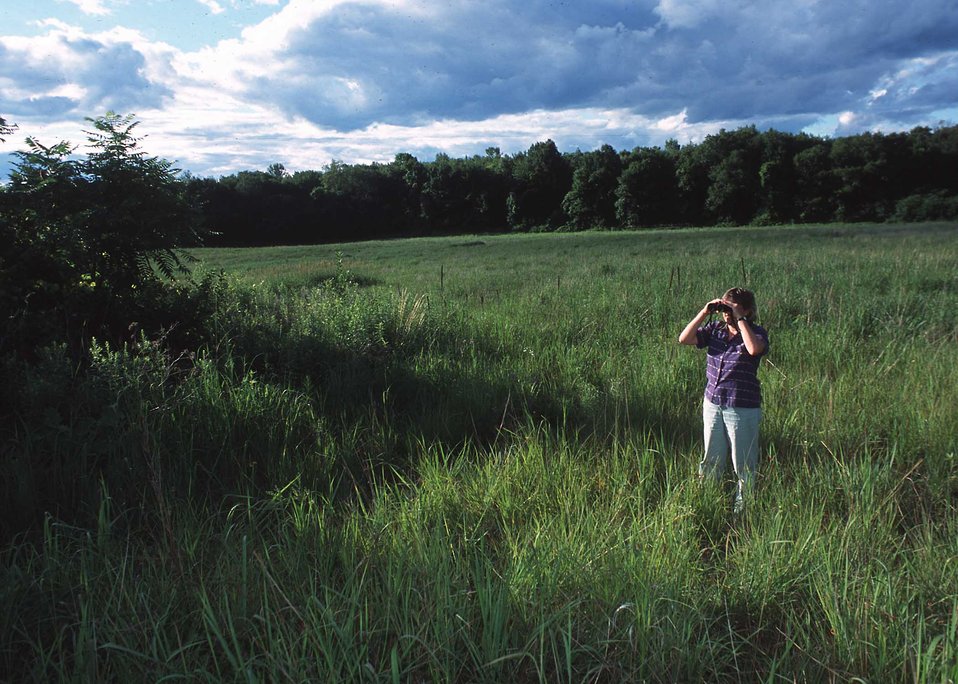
NRCS Conservationist, Lisa Krall conducting a warm season grassland habitat bird survey in Litchfield County.